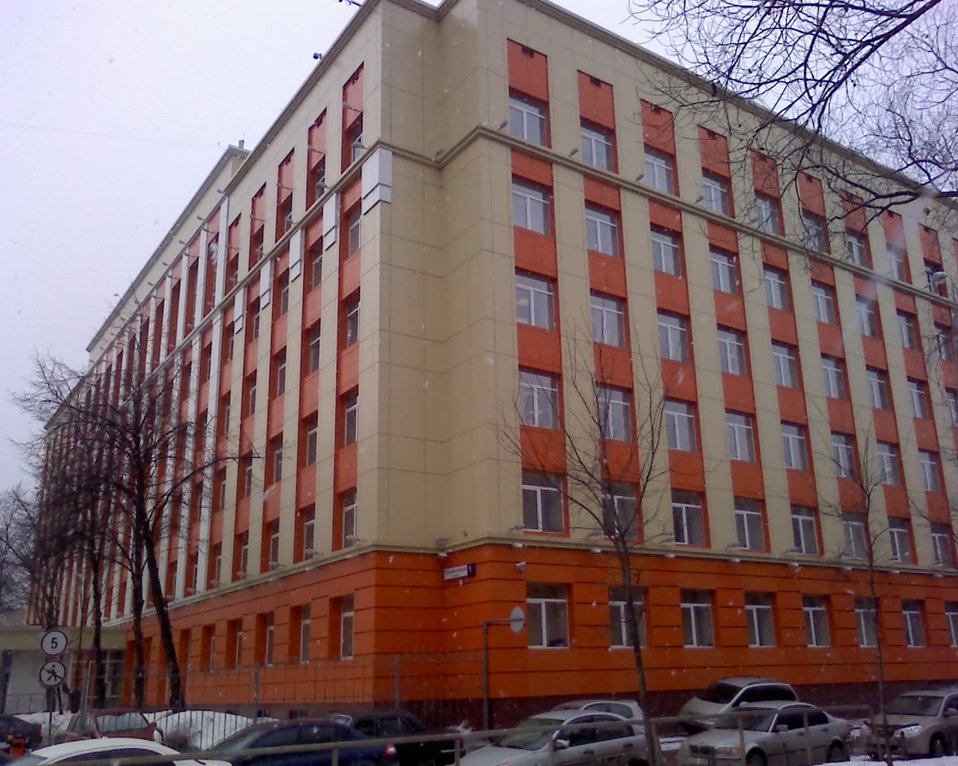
Русский: Москва, Тимирязевская улица, дом 1, строение 1. Офисное здание, полностью облицованное пластиком. Пересечение с Дмитровским –ø—Ė斵–∑–¥–

Русский: Москва, Тимирязевская улица, дом 1, строение 1. Офисное здание, полностью облицованное пластиком. Пересечение с Дмитровским проездом, начало Башиловской улицы.